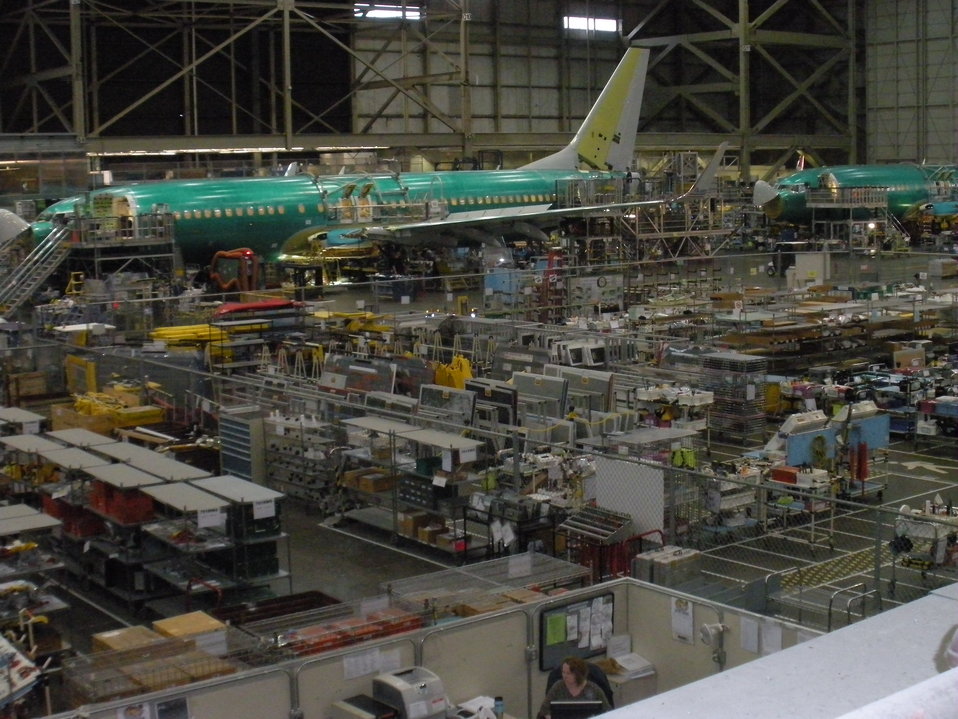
Boeing Plant in Renton, 5/18/2010

Secretary Geithner toured a Boeing 737 plant in Renton, WA on May 18, 2010.